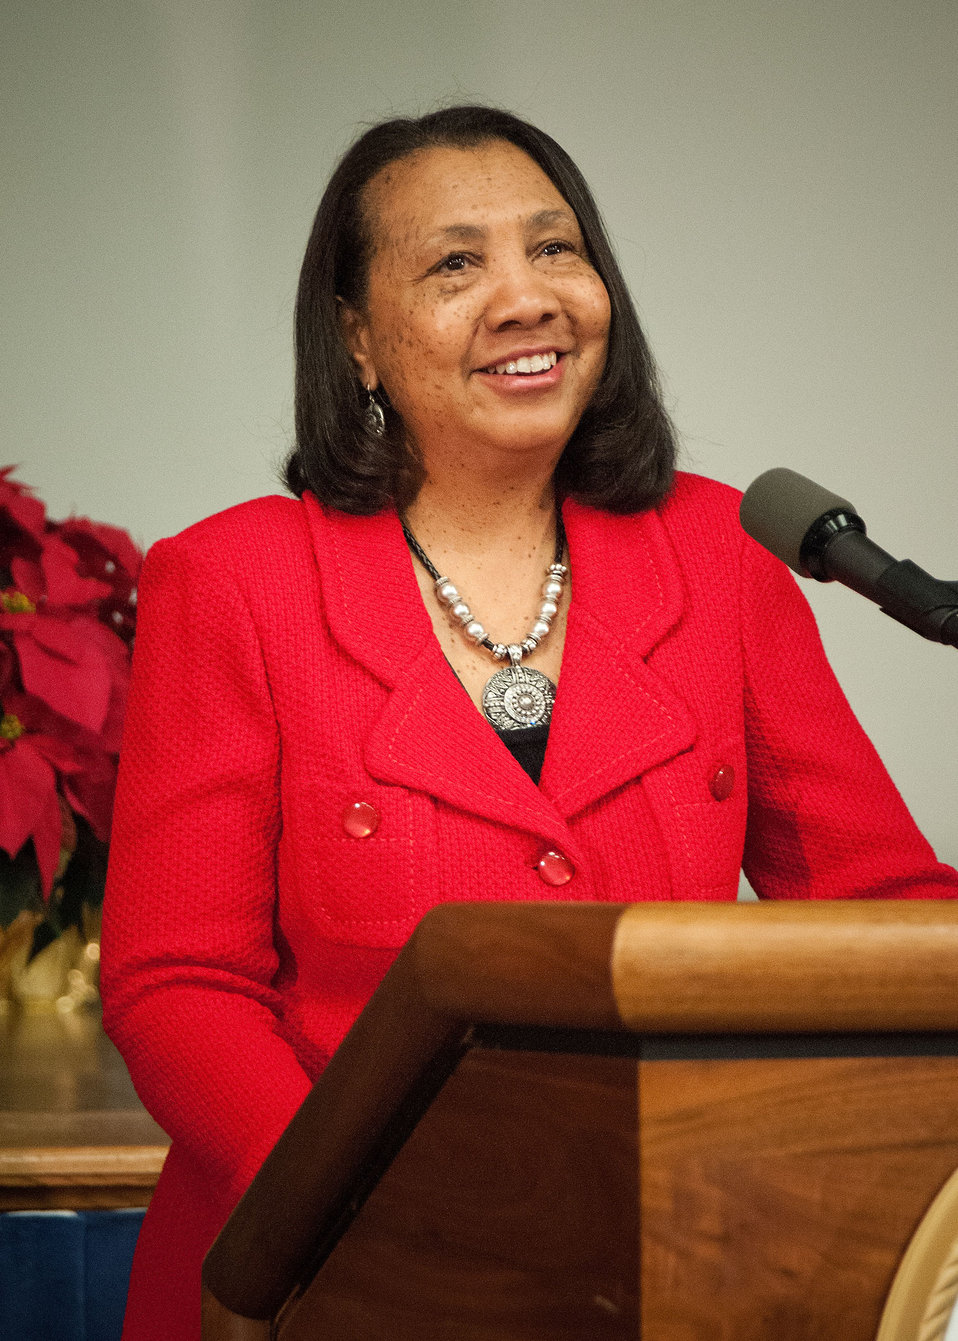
Agriculture Associate Assistant Secretary for Administration Dr. Alma Hobbs presents awards to U.S. Department of Agriculture (USDA) employees for Special recognition for the Cultural Transformation Initiative at USDA's Fourth Annual Cultural Transformation event held in Washington, D.C. on Tuesday, Dec. 4, 2012. The theme for the event “Faces of Cultural Transformation” Focusing on changing the way we serve our customers and cultural transformation’s benefits to employees.